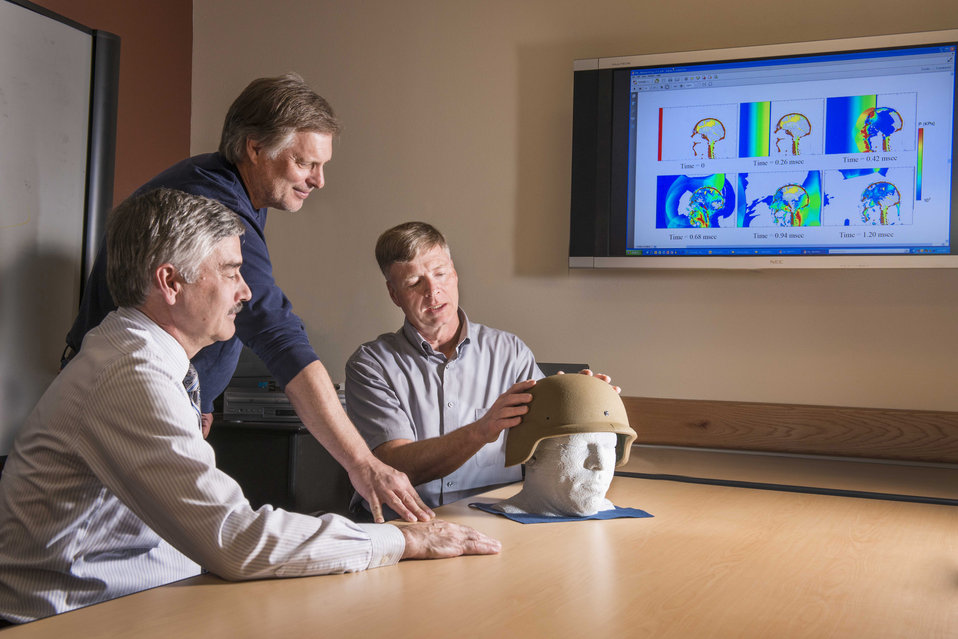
Researchers from Sandia National Laboratory's Terminal Ballistics Technology Department and University of New Mexico's Health Sciences Center discuss their research on traumatic brain injuries.

The researchers are comparing supercomputer simulations of the physical effects of blast waves on the brain with UNM's analyses of patients who have suffered such injuries.